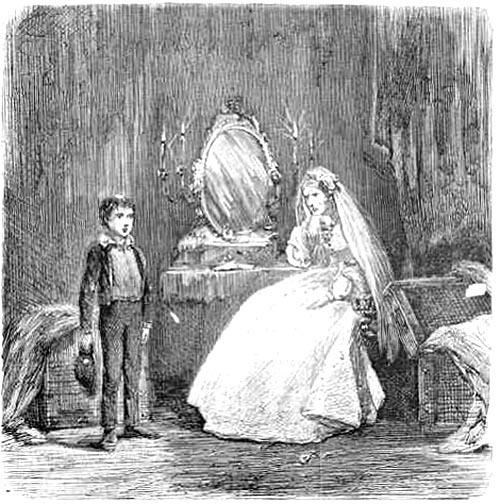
Pip's first encounter with Miss Havisham, by John McLenan